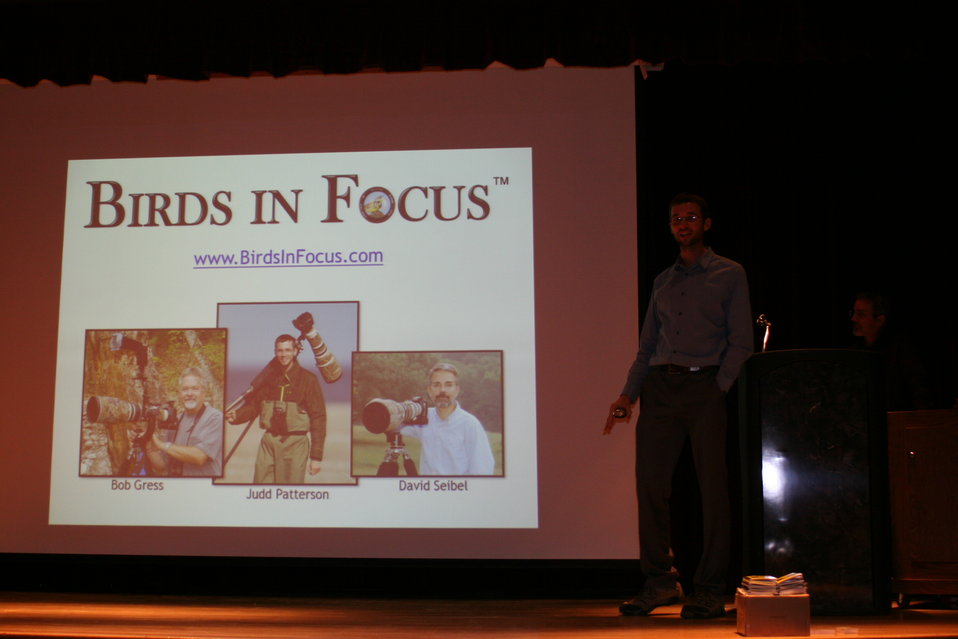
Birds in Focus Presentation

Photo Credit: Suzanne Fellows / USFWS
The U.S. Fish & Wildlife Service sponsored the 2012 Federal Duck Stamp Art Contest September 28 and 29 in Ogden, Utah, at Weber State University. A panel of five judges was responsible for choosing the art work used to design the 2013-2014 Migratory Bird Hunting and Conservation Stamp.